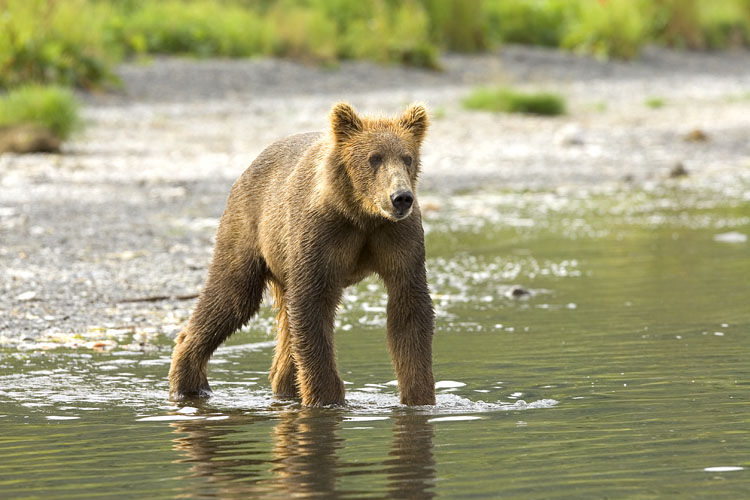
KOD Hildebrand (6)

Kodiak National Wildlife Refuge- Wildlife